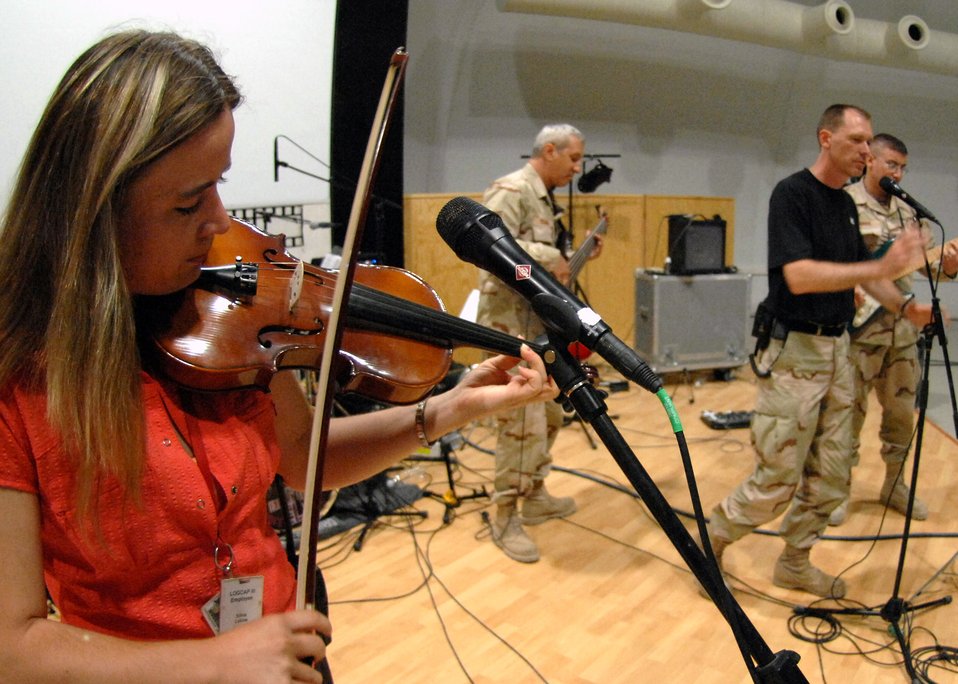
On tour in the AOR

Sylvia Labine accompanies the U.S. Central Command Air Forces Band